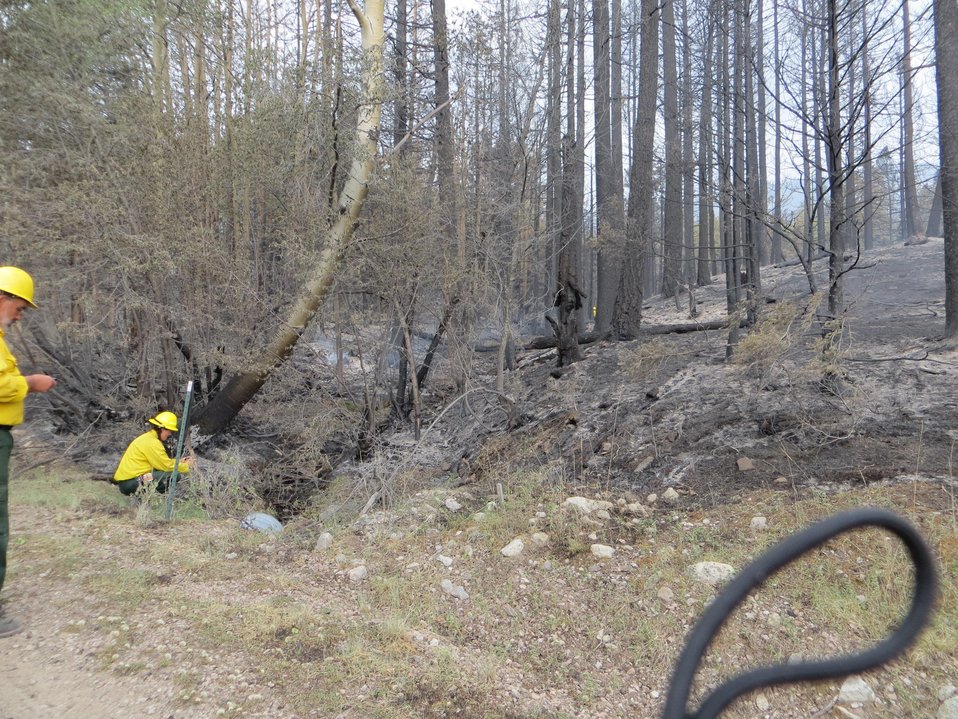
Burned Area Emergency Response (BAER) assessment teams examine the burned out areas at the Thompson Ridge Fire in the Sante Fe National Forest approximately 10 miles north of Jemez, NM. The fire began on May 31, 2013 by human ignition has consumed over 29, 903 acres. BAER teams are comprised of specialists that are highly experienced in conducting rapid watershed assessments and analyses and may include soil scientists, hydrologists, geologists, biologists, geographic information system specialists, archeologists, botanists, silviculturists, and civil engineers. (Silvaculturists are individuals that specialize in the care and cultivation of forest trees).